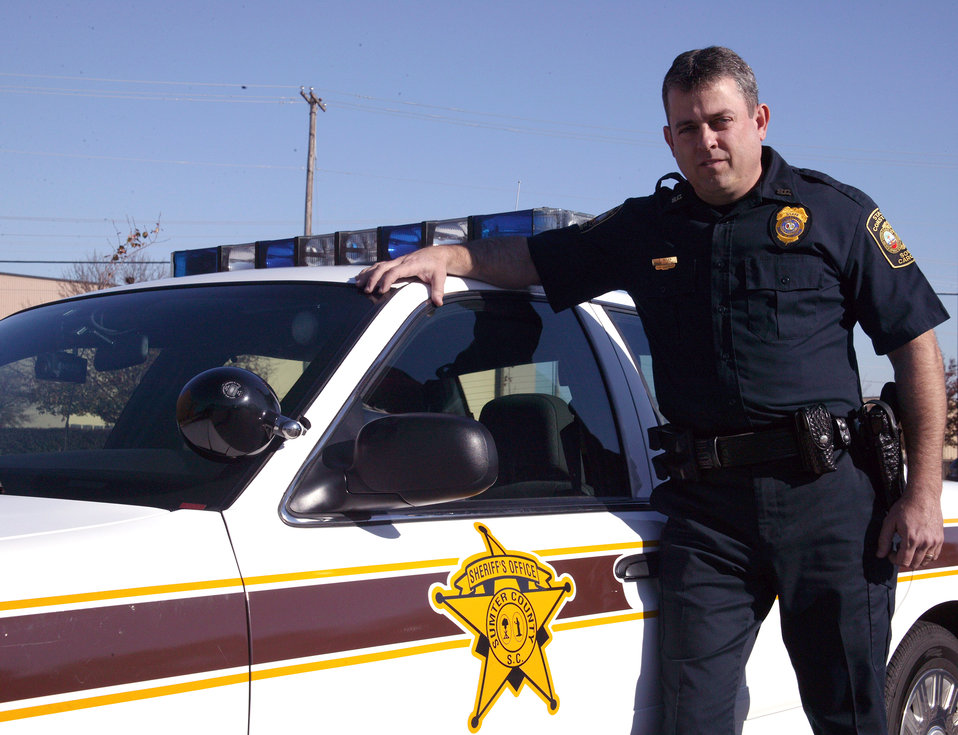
Fighting crime

SUMTER, S.C. (AFPN) -- Tech. Sgt. Tim Allen has been a volunteer South Carolina constable for three years. He is with the 682nd Air Support Operations Squadron at Shaw Air Force Base, S.C.